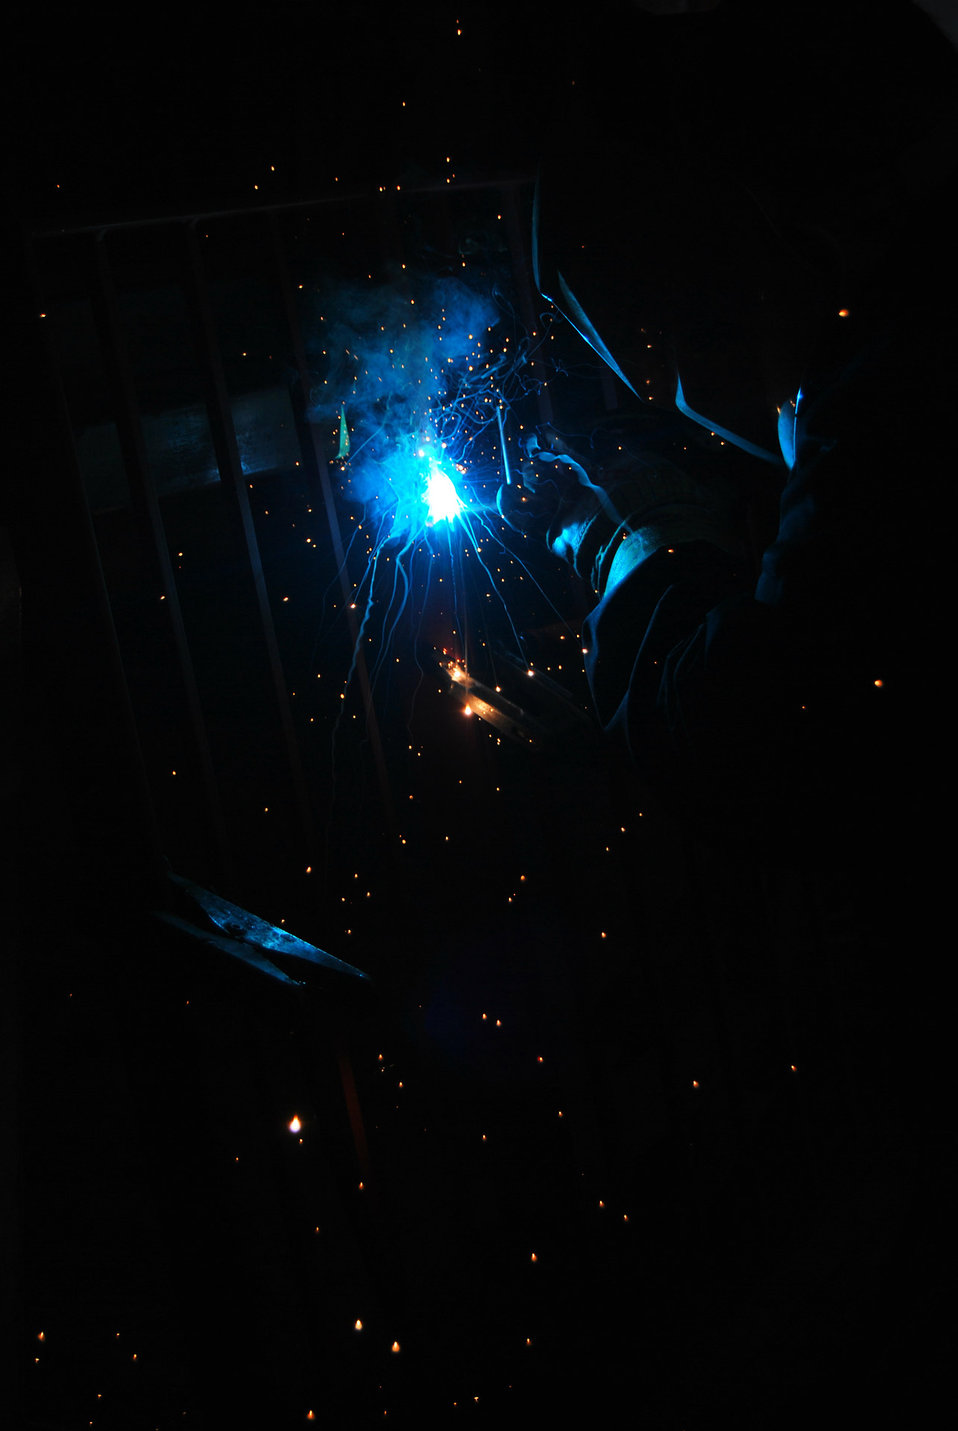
Metal welder 1

Lighting effects in welding.